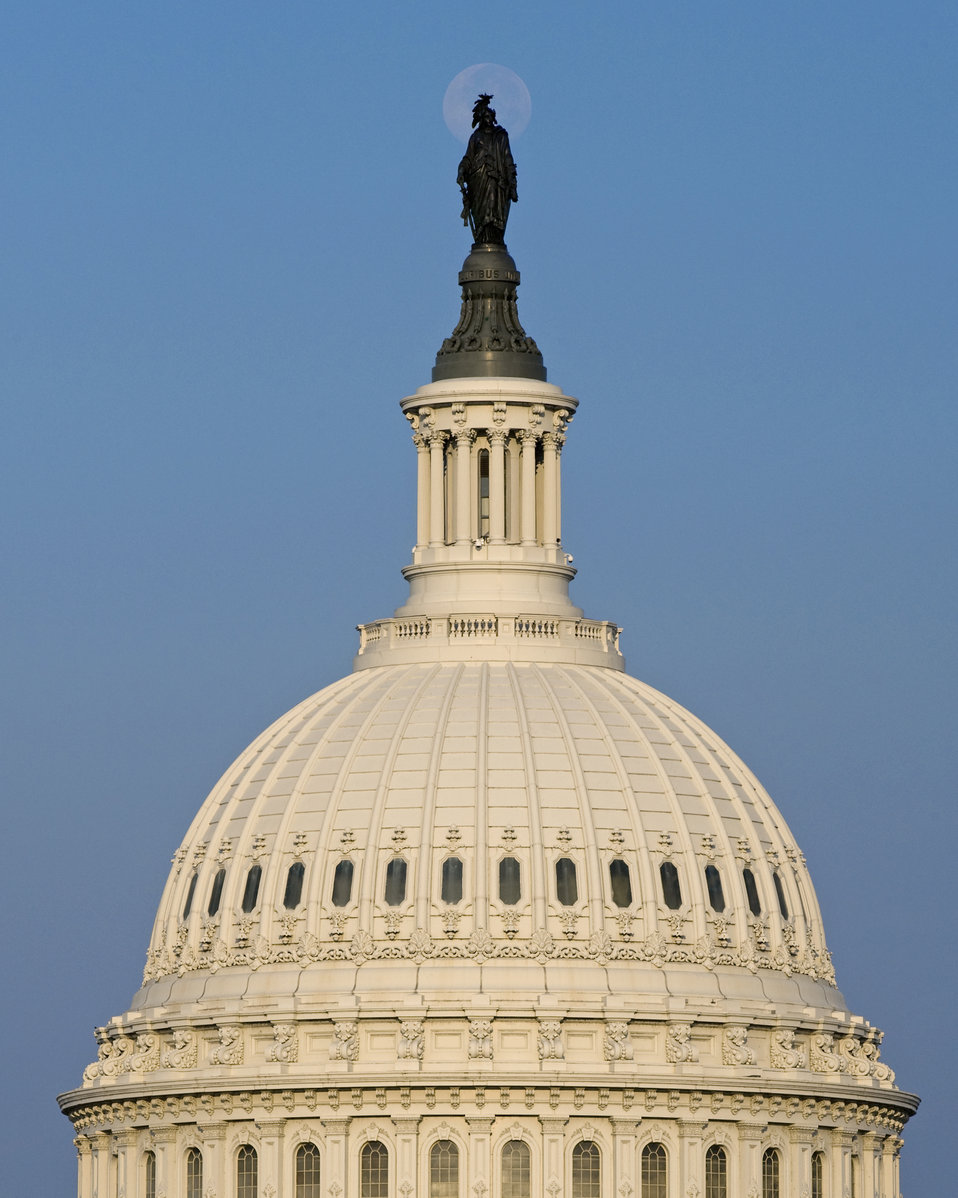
Capitol Dome

August 2010